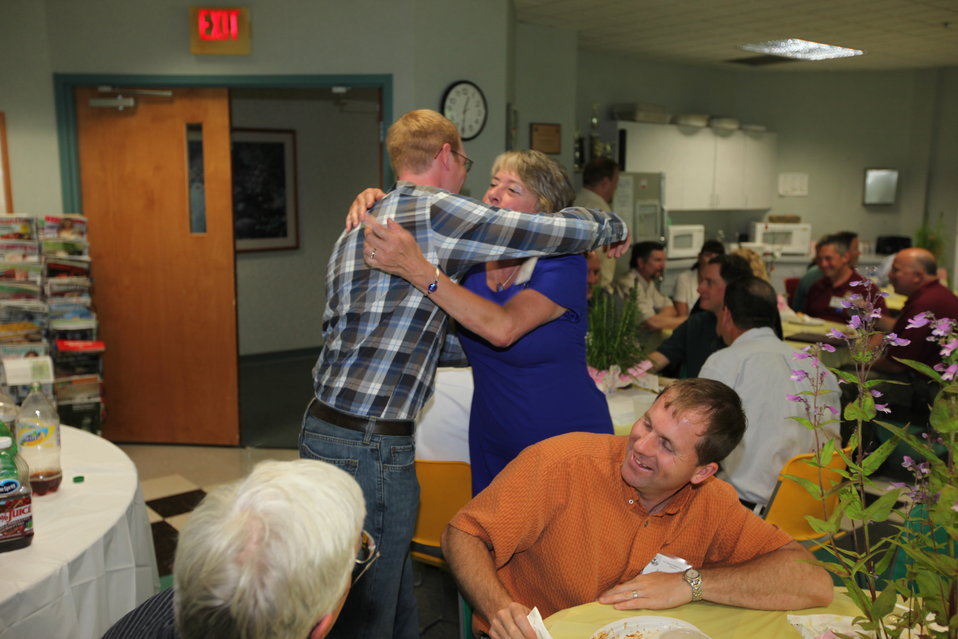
Northeast Region Employee Appreciation Awards

Luncheon